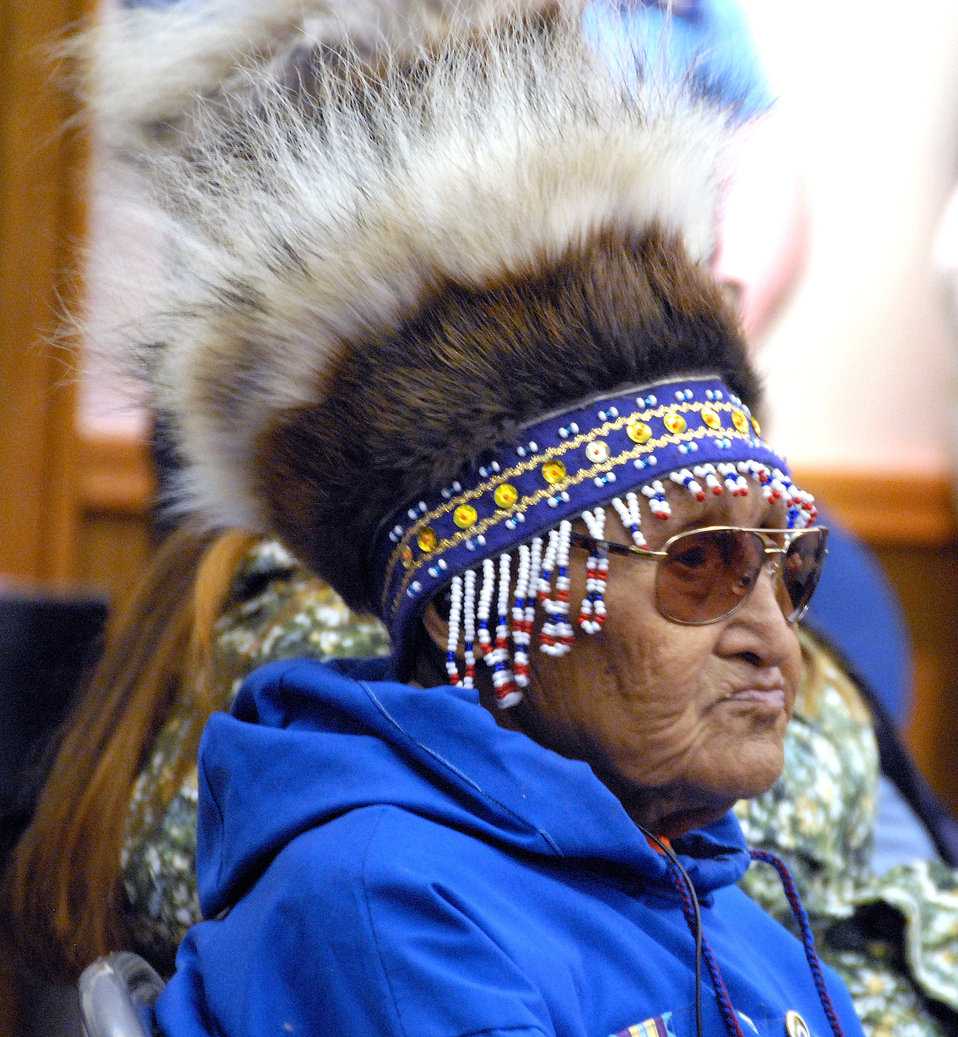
Rural Tour 0163

Rural Tour Alaska Aug 2009